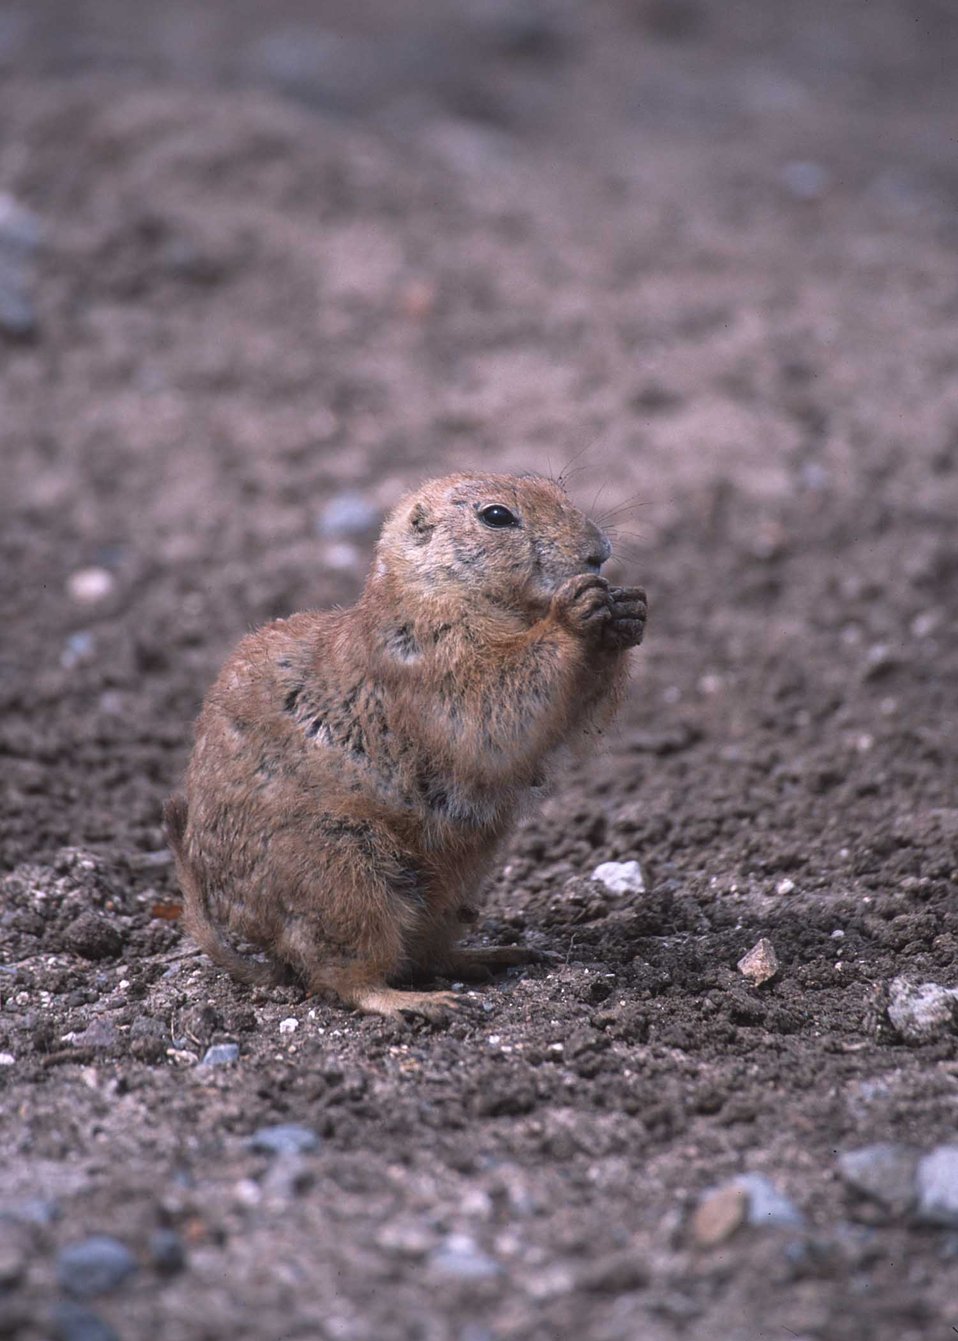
Blacktailed Prairie Dog, Oklahoma.